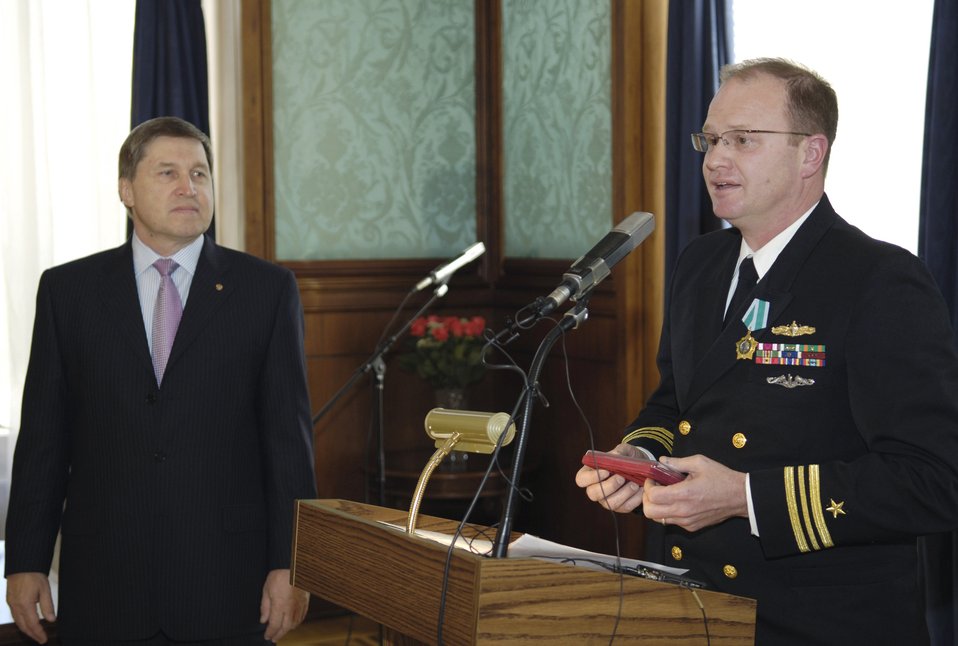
Order of Friendship Medal

Navy Lt. Cmdr. Steven Smith speaks after receiving the Order of Friendship Medal from Russian Ambassador Yuri Ushakov at the Russian Embassy in Washington, D.C., Tuesday, Feb. 28, 2006. Commander Smith and Air Force Maj. Patrick Poon received the medals for their actions associated with the rescue of a Russian submarine crew Aug. 7.